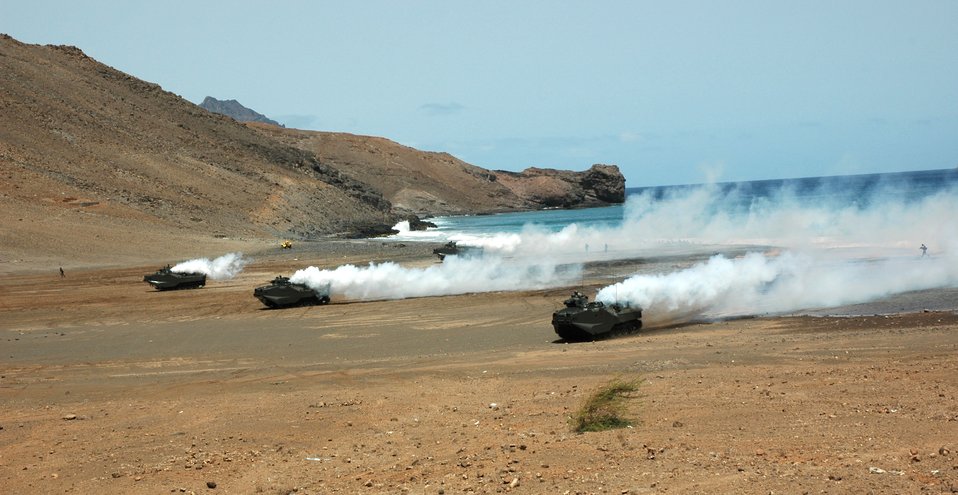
NATO troops exercise at Steadfast Jaguar

A simulated amphibious and land assault is conducted in Sao Vicente, Cape Verde, on Friday, June 23, to demonstrate NATO's show of force during Exercise Steadfast Jaguar. More than 7,000 NATO servicemembers from land, maritime and air components are participating in the exercise, which ends today.